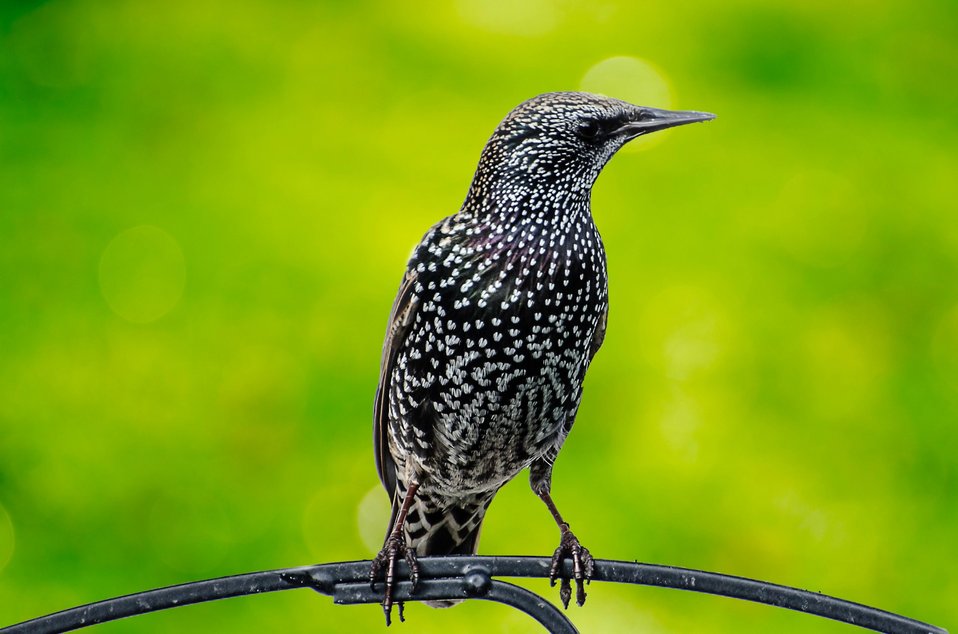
Bird - sturnus vulgaris

Bird isolated on the green background.